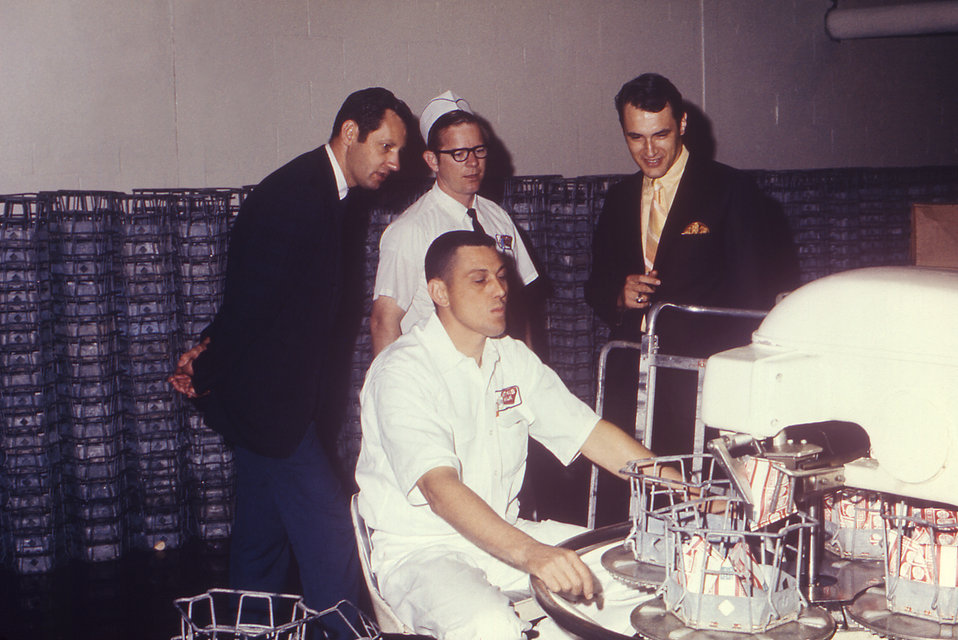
In this 1970 photograph, two CDC sanitarians Frank Bran (Lt), and an unidentified official (Rt), were discussing, and observing the milk production process with two dairy technicians, while touring a milk-production facility.